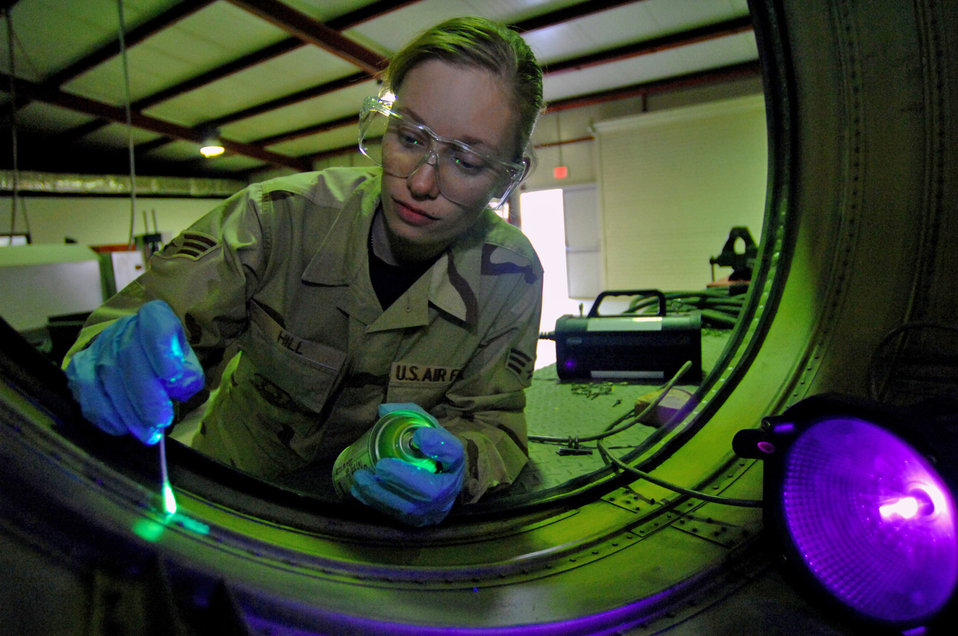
Shine on

To find cracks, Senior Airman Rebeca Hill puts fluorescent fluid on the engine exhaust cover of an F-16 Fighting Falcon Feb. 21 at Balad Air Base, Iraq. She is deployed from Hill Air Force Base, Utah.